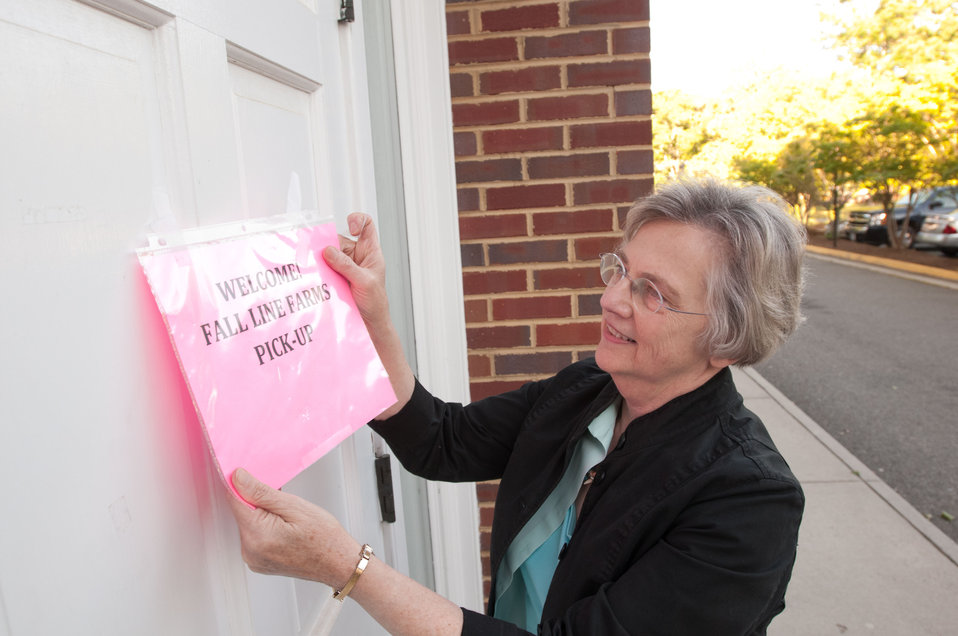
Fall Line Farms volunteer Jane Tucker posts the pick up notice at the Bon Air United Methodist Church pick-up point, in Richmond, VA, on Thursday, May 5, 2011. Traditional food cooperatives provide identical orders. This is one of several pick-up points in the Richmond area. This local food hub offers a wide variety of household food staples and specialty items. Members can pick their customized orders from an ever changing inventory of fruits, vegetables, meats, soaps, eggs, cheeses, flowers, honey, pastas, sauces, syrups, baked goods, mushrooms, flour and grains. Suppliers post what they have on a Lulus Local Food online listing and customers can make their selection. Then every Thursday suppliers team up with other suppliers to deliver orders to, one of several pick-up points, designated by the customer in or around the Richmond area.